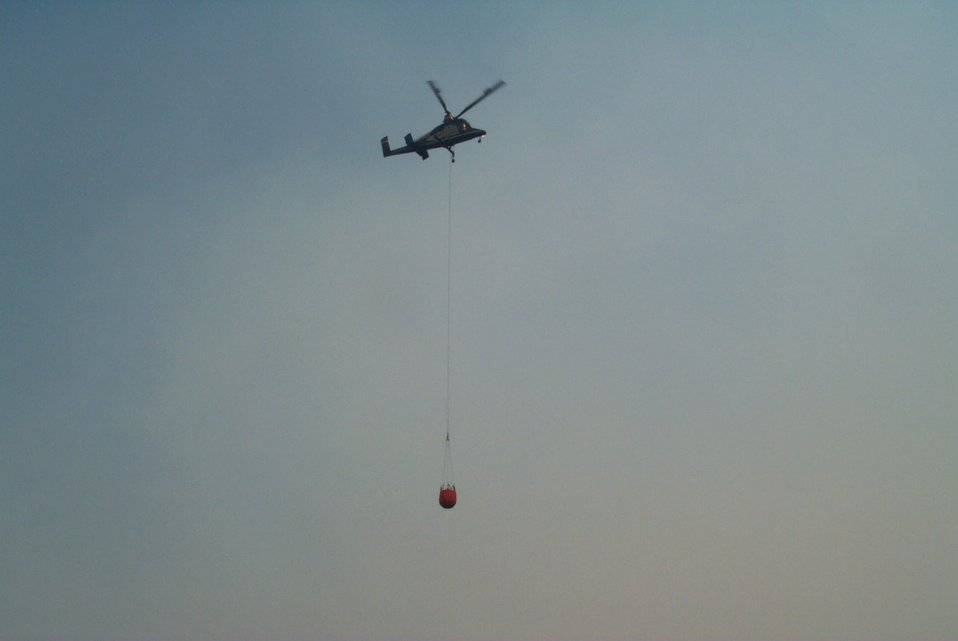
Helicopter drop Fire Clearwater Fire Salmon Field Office USRD Upper Snake River District